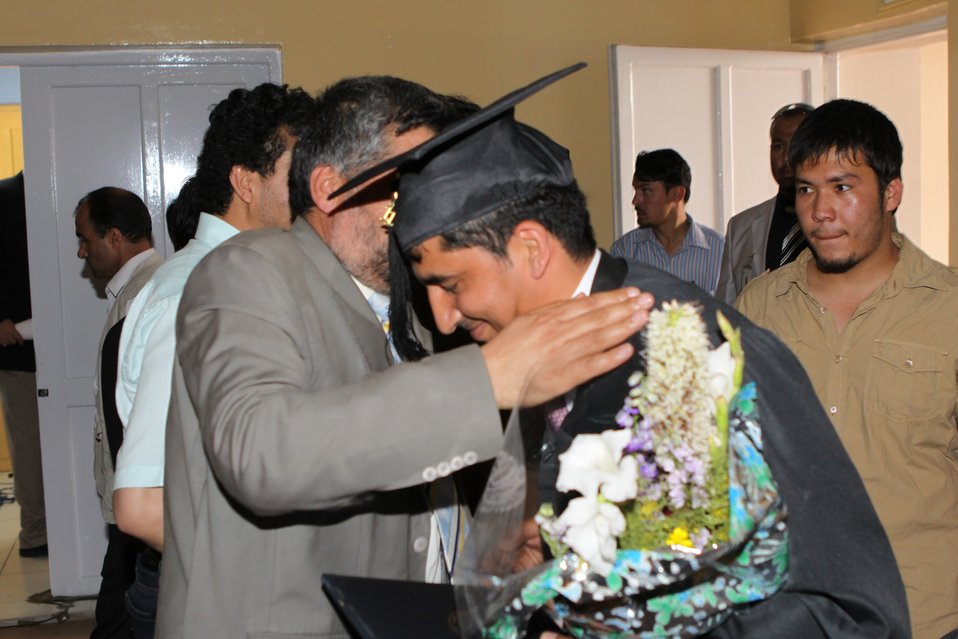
100526 AUAF Graduation 309